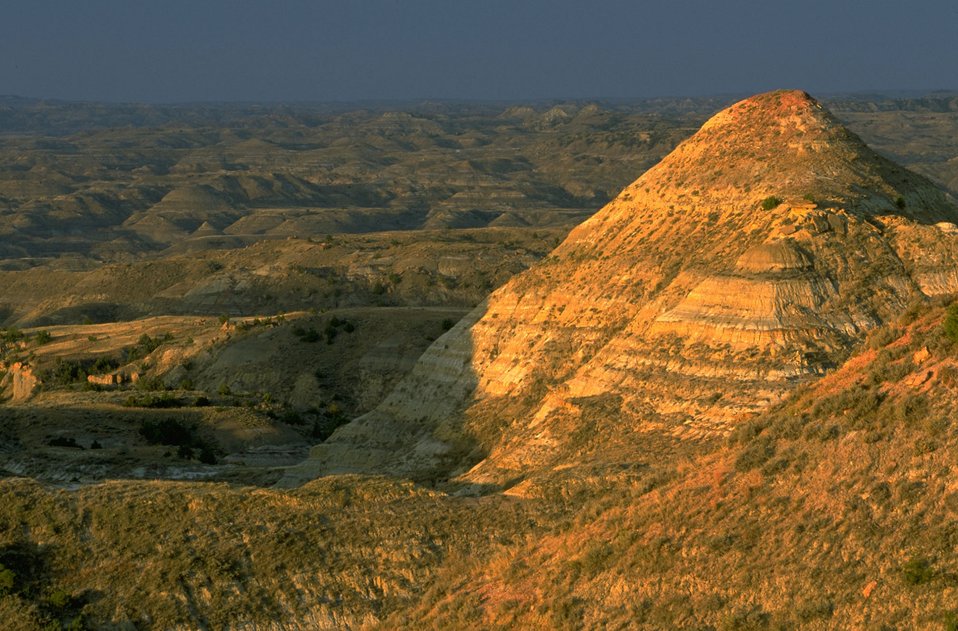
The sun turning a hill to gold in the Terry Badlands